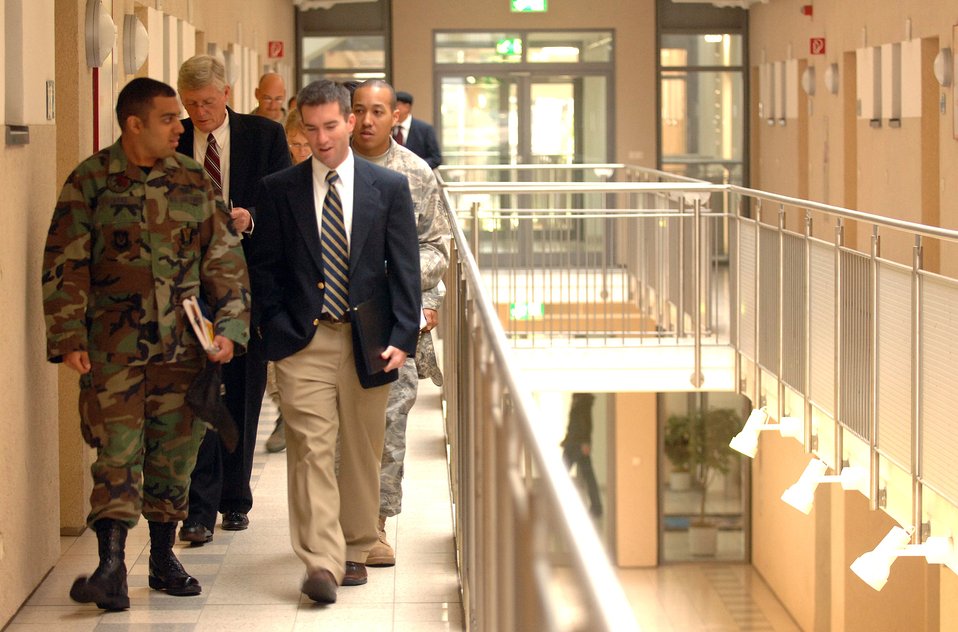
Congressional team evaluates Airmen's living quarters

Keith Baker and Adam Johnson receive a tour of the 435th Civil Engineer Squadron dorm Oct. 16 at Ramstein Air Base, Germany. The visit was part of a Department of Defense-wide investigation to assess the quality of unaccompanied housing offered to single servicemembers. Mr. Baker and Mr. Johnson are House Appropriations Committee staff delegates.